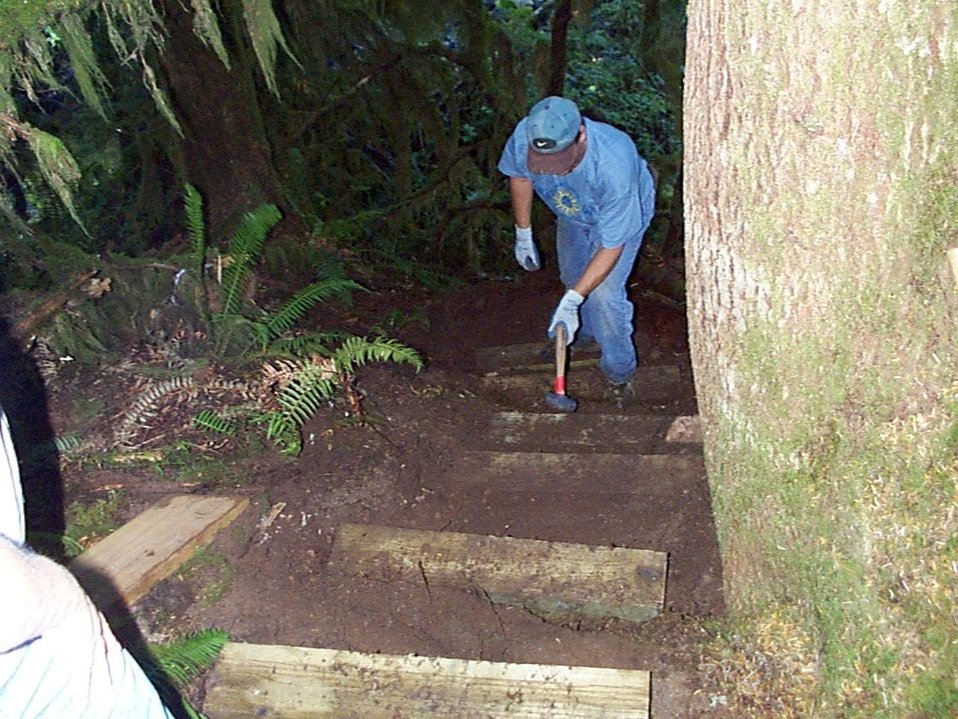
Volunteers construct steps on the trail at McGowen Creek.